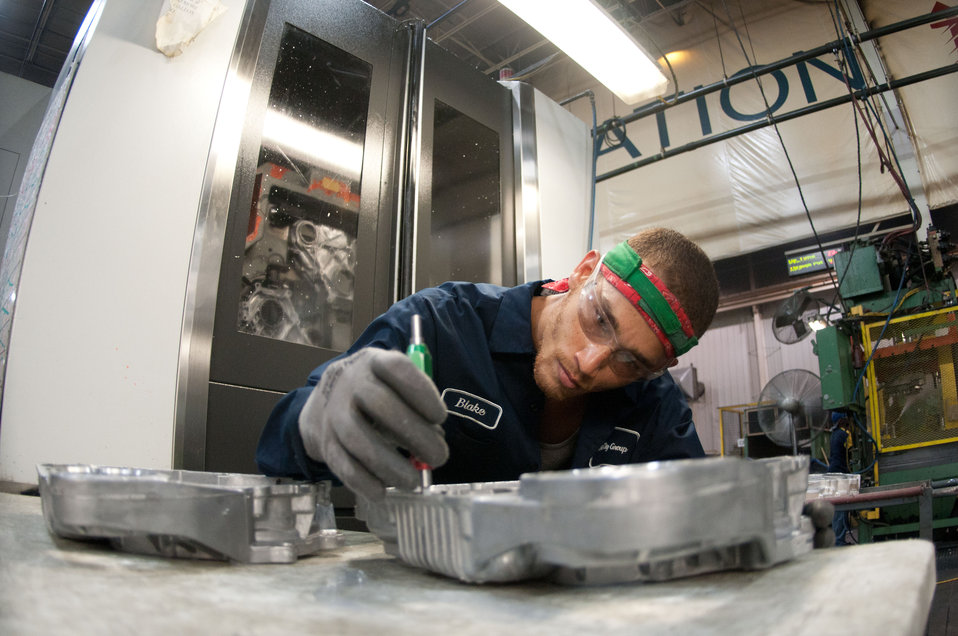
Computer Numerical Control (CNC) machine operator Blake Veeneman makes a inspects a casting at the Port City Group’s Port City Castings Corporation manufactures high-pressure aluminum die-castings, mostly for the automotive industry, in Muskegon, MI, facility on Wednesday July 20, 2011. Port City Group boosted its employment by 12 percent over last year thanks to two Rural Business Guaranteed Loans totaling $9.6 million. In its 80,000 sq. ft. facility, machines that range from 800 – 1,600 tons, and cast A380 aluminum alloy products from melted ingots of aluminum, into automotive components of U.S.A. made vehicles. The process features a variety of robotic presses; computer controlled machining; quality control facility; and complete measurement and testing laboratory. In 2009 banks were backing out of loans for PCG equipment purchase agreements. The U.S. Department of Agriculture (USDA) loan guarantee helped make the loan possible with its guarantee. PCG obtained the needed robotic and other equipment. This resulted in a stable workforce that has since grown. When asked about their USDA experience, Port City Group Sales Manager Laura LaGuire said, “It was great! They were very helpful. Everything that came up was handled smoothly, the money came in place when it was needed, and it was a very smooth transition.”